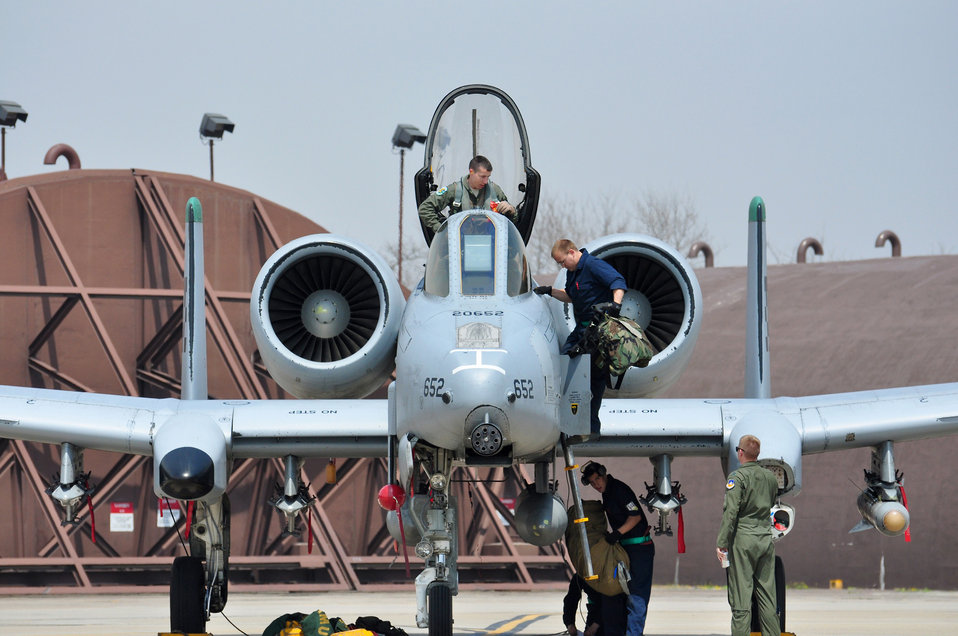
A-10s return

Maintainers conduct postflight operations on an A-10 Thunderbolt II April 21, 2011, at Osan Air Base, South Korea.